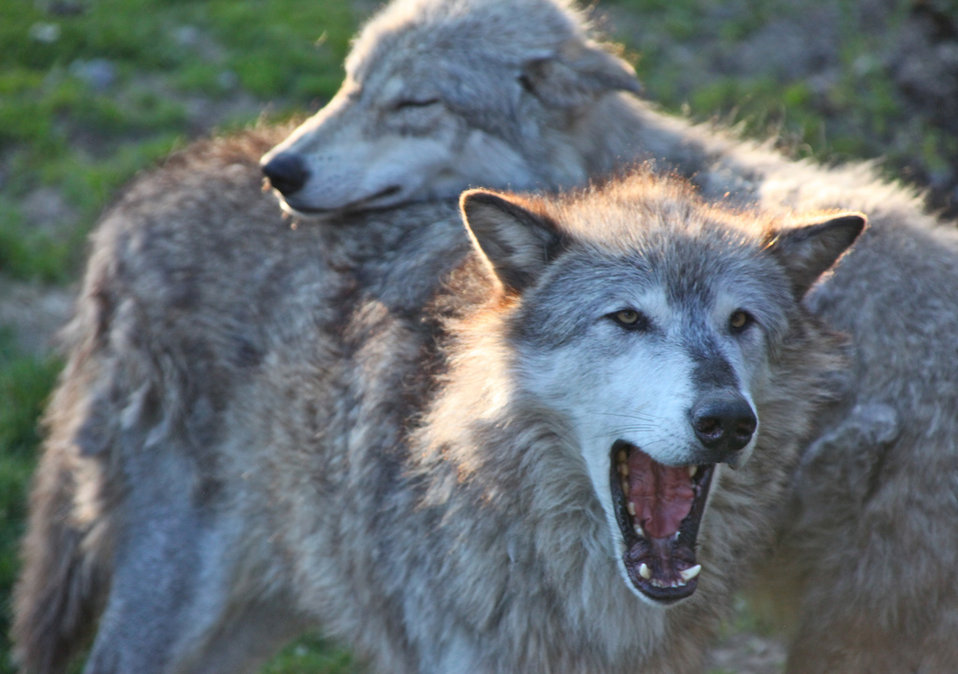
gray wolf pair